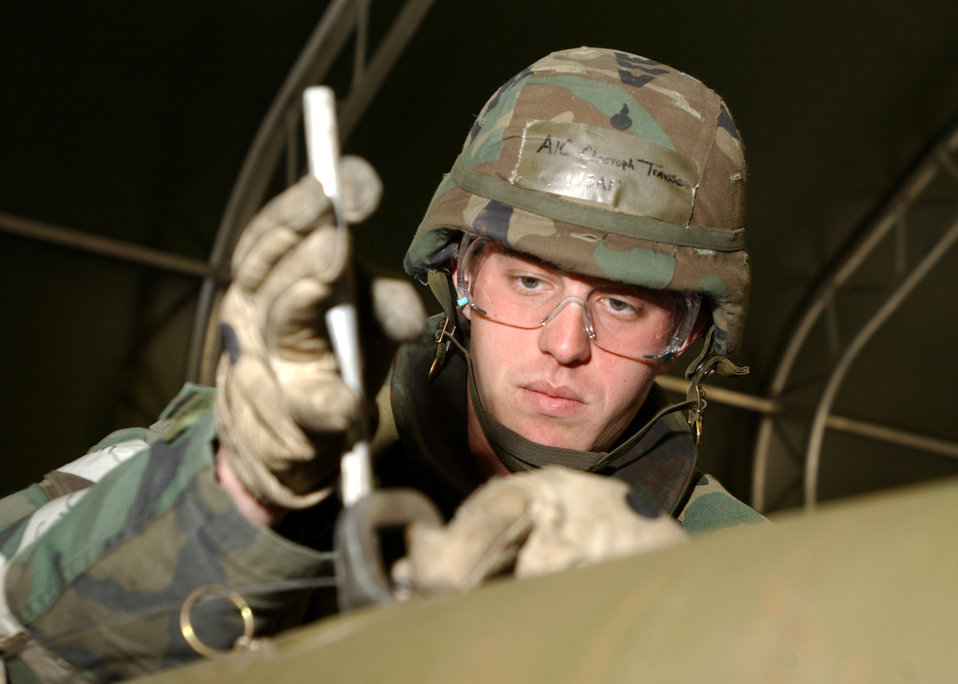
Nice and steady

EIELSON AIR FORCE BASE, Alaska -- Airman 1st Class Christopher Travise works on a bomb while in protective gear during an Operational Readiness Inspection here April 27. He is assigned to the 354th Maintenance Squadron.